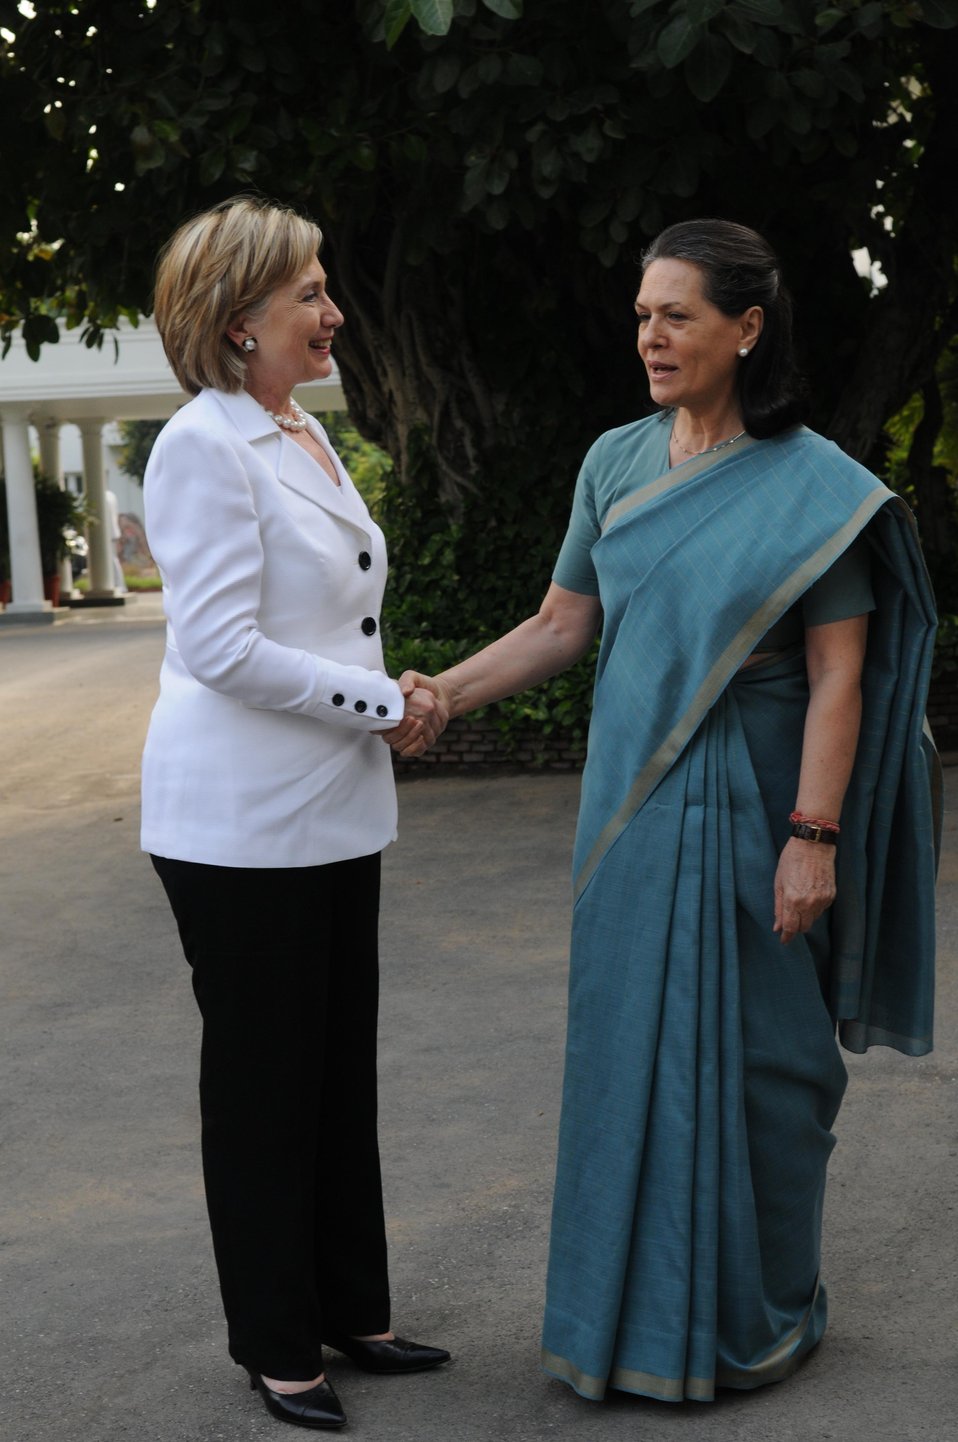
Secretary Clinton Meets With Indian Congress Party President

President of the Indian Congress Party Sonia Gandhi welcomes U.S. Secretary of State Hillary Rodham Clinton to her residence in New Delhi, India July 29, 2009.